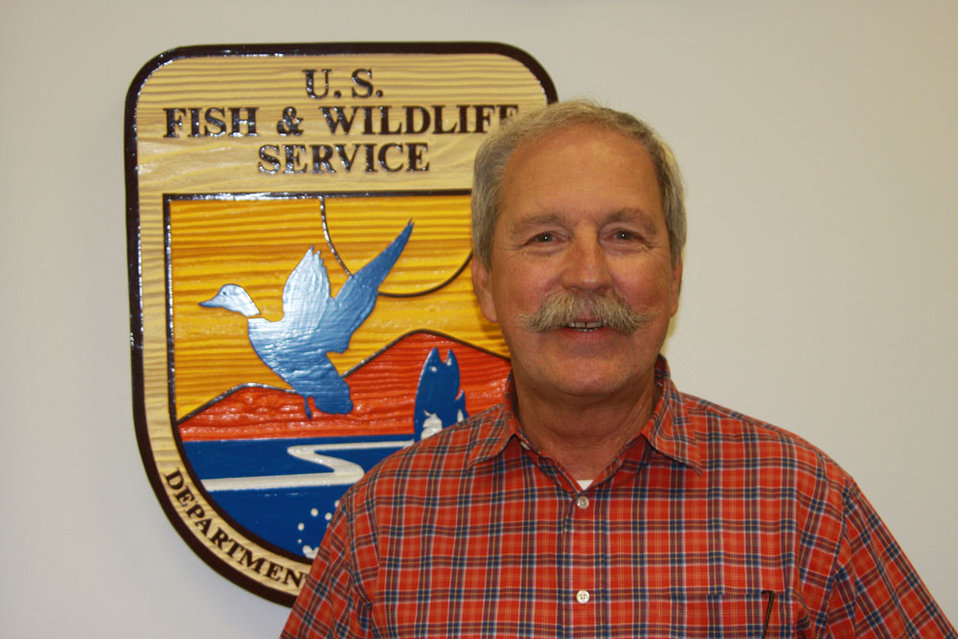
Rick Jones

There was a draft going when Riesley 'Rick' Jones finished school, but he hadn't yet been selected. On a visit to his grandparents, Jones stopped in Jonesboro, Arkansas, and signed up for the Army. He was trained in military intelligence and served a year in active duty and five with the reserves. After he came home from the Army, he picked up work with an air-conditioning firm for two years. Then he asked himself, 'I've got a biology degree, what am I doing working with air-conditioners?' This led him to a meeting with Pat Noonan with the Nature Conservancy. Jones believes he was the 32nd hire with the Conservancy. In 1984 he joined the Fish and Wildlife Service as a Senior Realty Specialist in Florida (Region 4). He left, but eventually realized that the right fit for him was working for the Service. He returned to the agency in 1991 to work in Texas. He adds, 'Fish and Wildlife Service puts wildlife first and that's why I came back and that's why I stayed. I'm in the front end of conservation work - I'm working with landowners on key land protection projects.' Today, Jones is the Chief of the Realty Division in the Southwest Regional Office.